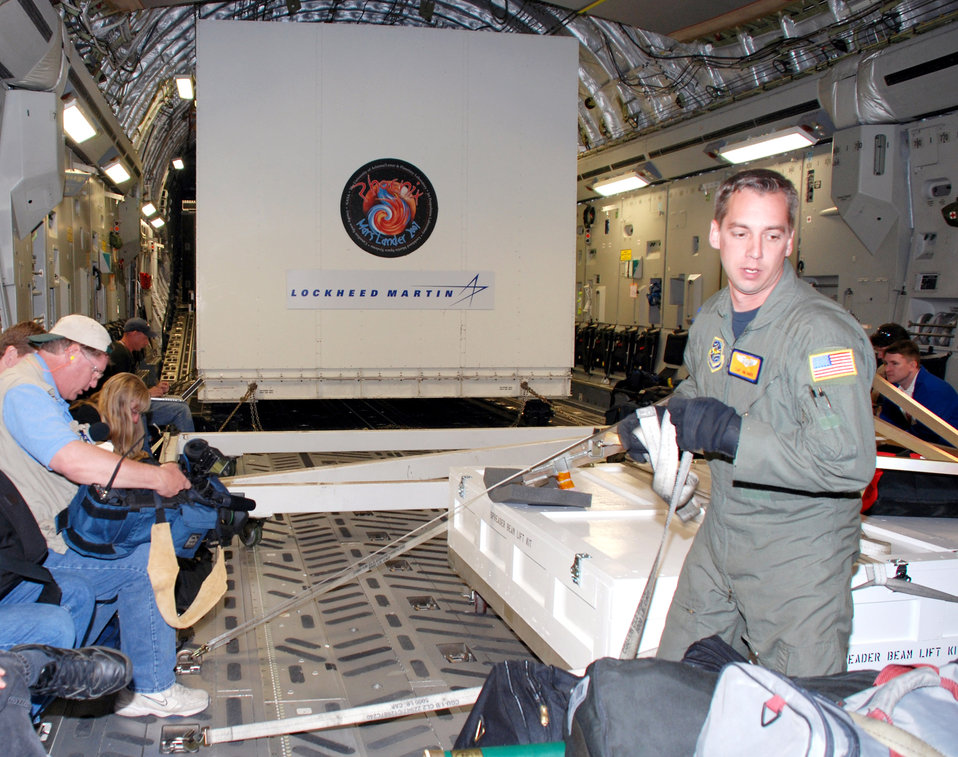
Charleston C-17 transports NASA's Phoenix Mars Lander

Tech. Sgt. James Hader secures NASA's Phoenix Mars Lander in a C-17 Globemaster III May 7 at Buckley Air Force Base, Colo. The lander, which was built at Lockheed Martin Space Systems Company's Waterton Canyon facilities in Littleton, Colo., was loaded on a C-17 for transportation to NASA's Kennedy Space Center in Florida for final test and launch preparations. The Phoenix lander is slated for liftoff aboard a Delta II launch vehicle in early August. Sergeant Hader is a loadmaster with the 16th Airlift Squadron at Charleston Air Force Base, S.C.